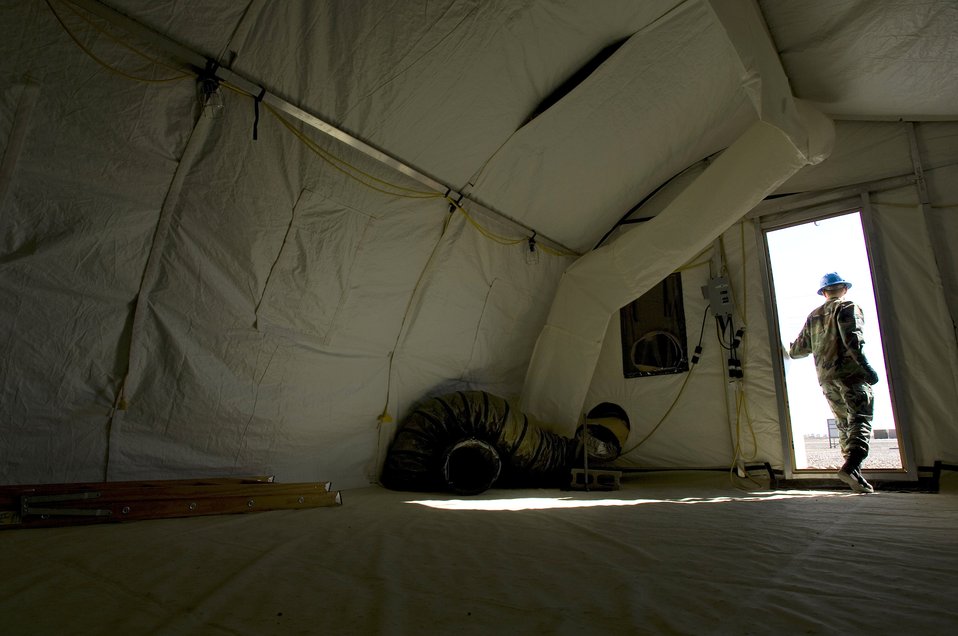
Providing shelter is a BEAR

Senior Airman Andy Karabelski steps out of a small shelter system after a final inspection during a Jan. 16 exercise at Holloman Air Force Base, N.M. Airman Karabelski is assigned to the from the 49th Material Maintenance Group. Members of the 49th MMG can build a Basic Expeditionary Airfield Resource, or BEAR, in austere conditions anywhere in the world. Airmen of the 49th MMG maintain a constant state of readiness and can be tasked to support any Department of Defense or Federal Emergency Management Agency humanitarian operations along with primary duties of supporting combat operations.